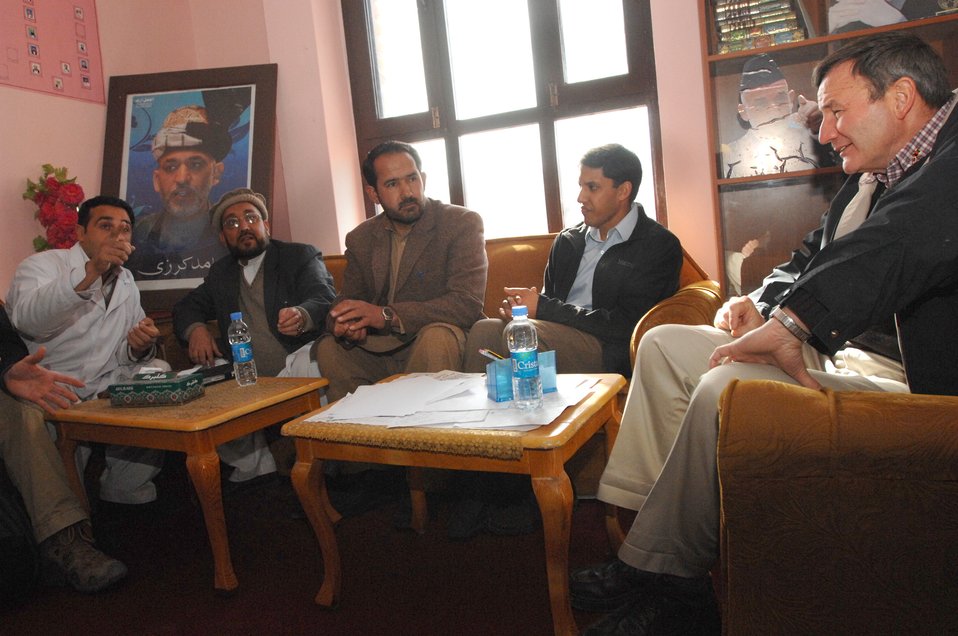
110209sv Shah122

U.S. Ambassador Karl W. Eikenberry and Dr. Rajiv Shah, Administrator of the United States Agency for International Development (USAID), meet with local officials in Surkh Rod, Nangarhar Province, on Wednesday, February 9, 2011. (S.K. Vemmer/Department of State)